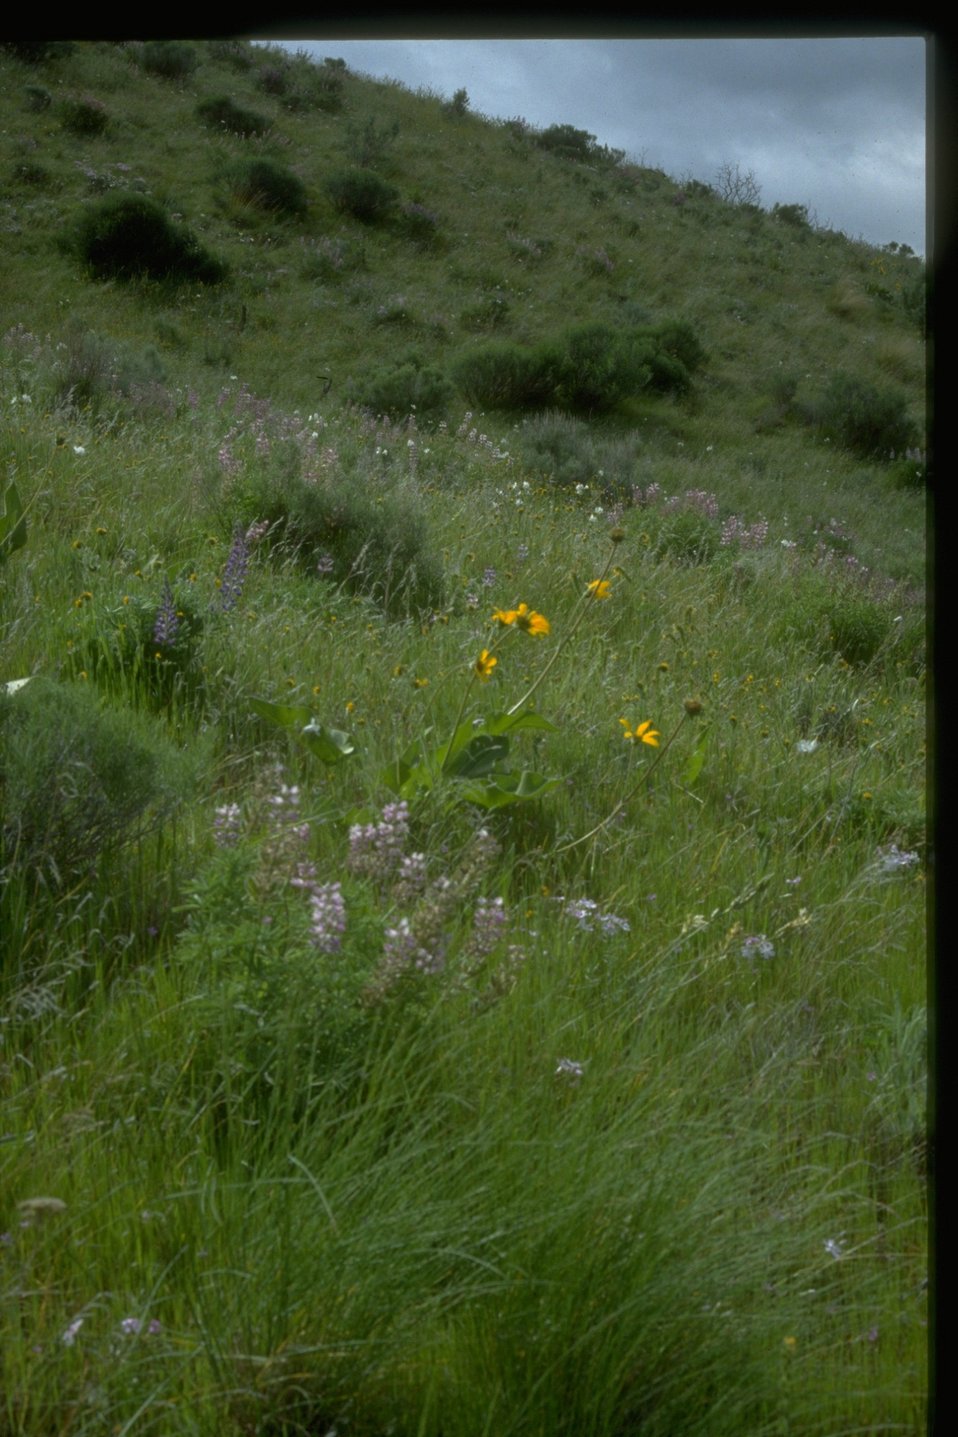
A wide variety of healthy grasses, forbs, and shrubs along the Deschutes River.